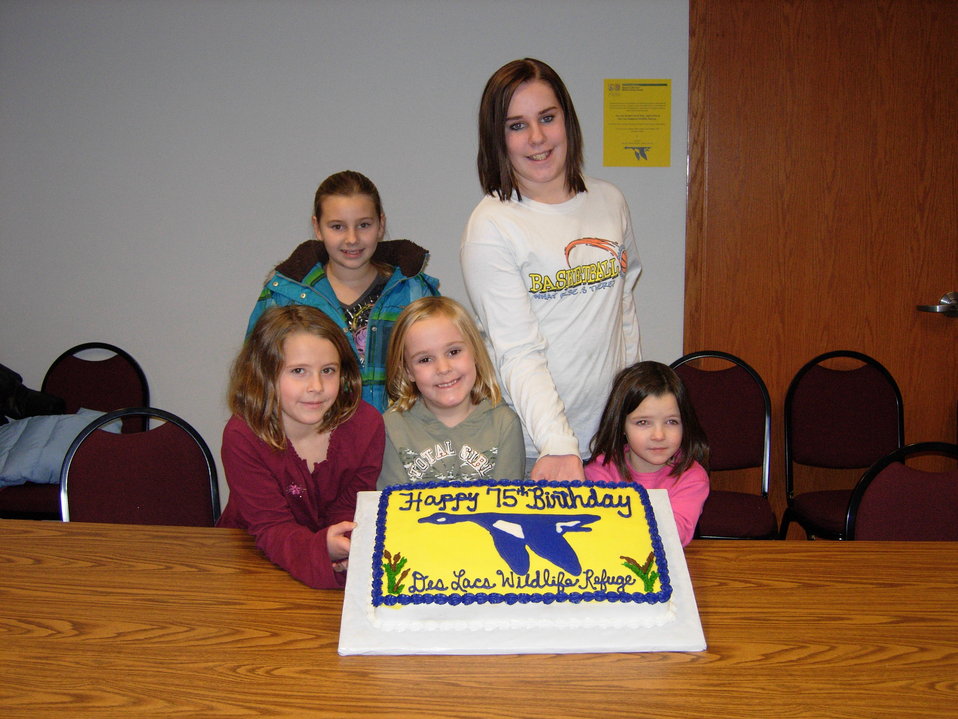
Happy 75th Birthday Des Lacs Refuge!

Kenmare youth proudly present Des Lacs' birthday cake - now dig in!